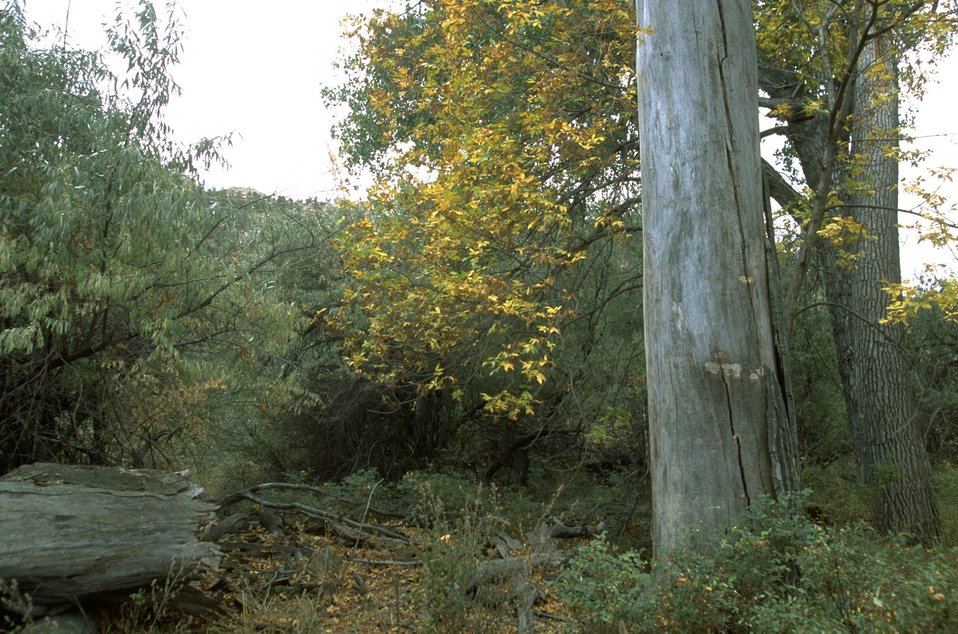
Autumn colors at the Howrey Island Recreation Area